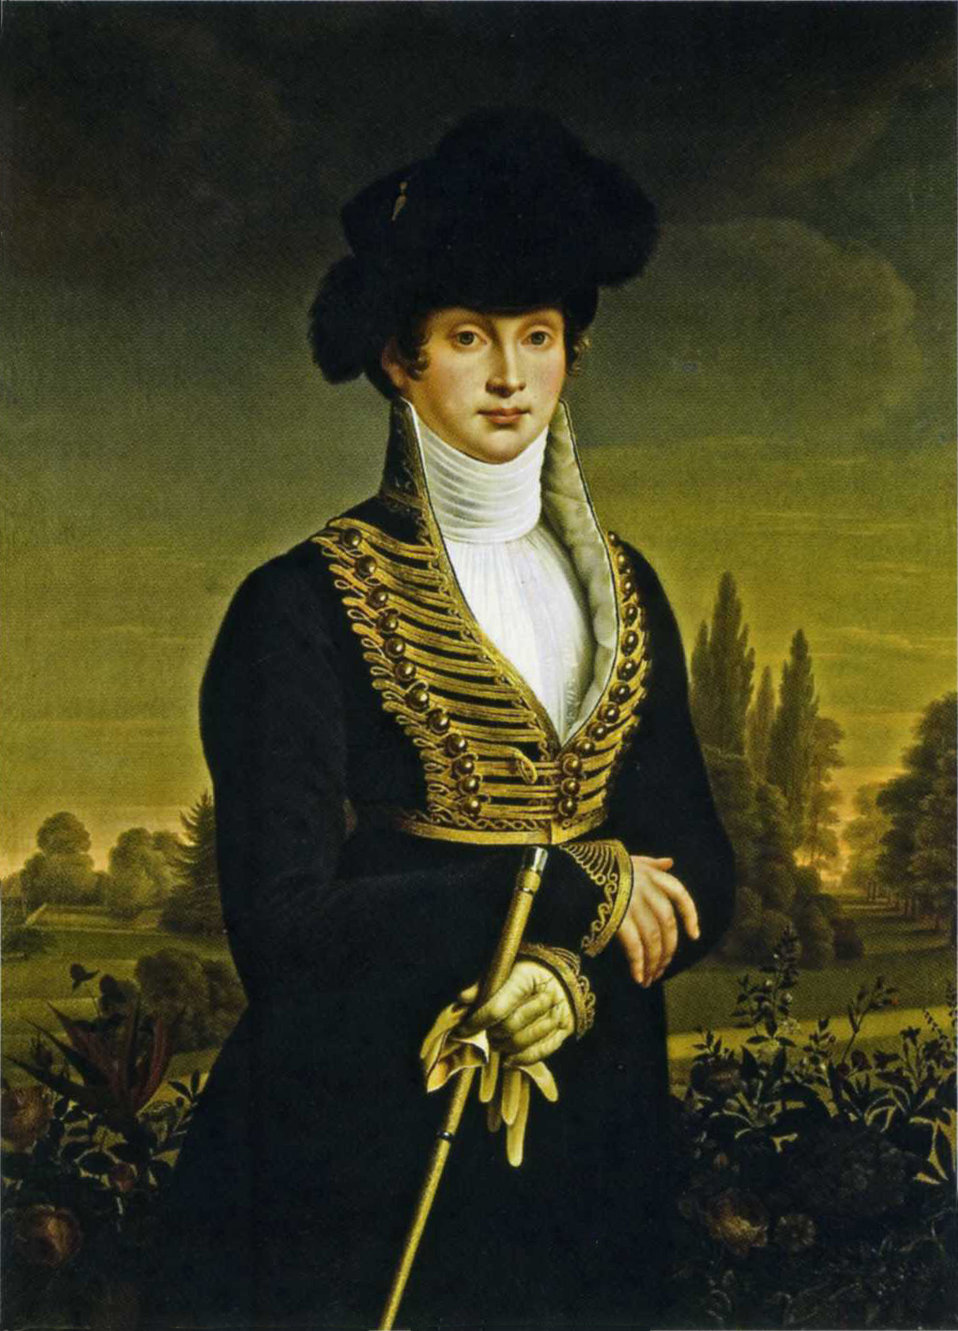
Königin Luise (Ternite)